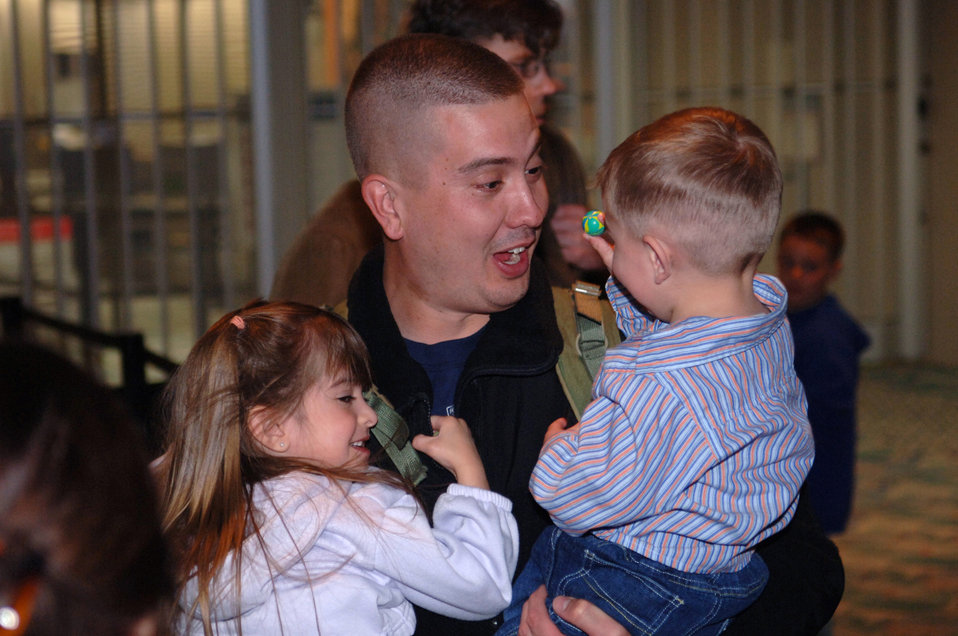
Welcome home to South Dakota

Staff Sgt. Paul Flanagan holds his children, Maghan and Braden, upon arriving at the Rapid City Regional Airport March 21. Sergeant Flanagan, assigned to the 28th Security Forces Squadron, returned from a deployment to Southwest Asia in support of operations Iraqi Freedom and Enduring Freedom.